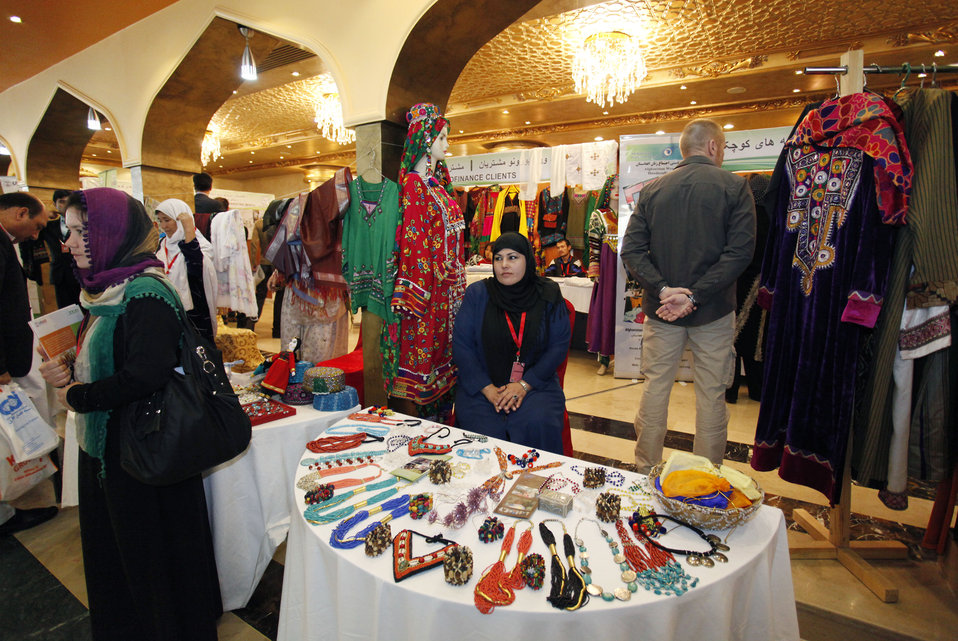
Access to Finance Exhibition in Kabul

Vendors show their goods at the Second Access to Finance Exhibition in Kabul on Tuesday, October 29, 2013. Thousands of business representatives from across Afghanistan attended the exhibition promoting branchless banking and electronic payments.